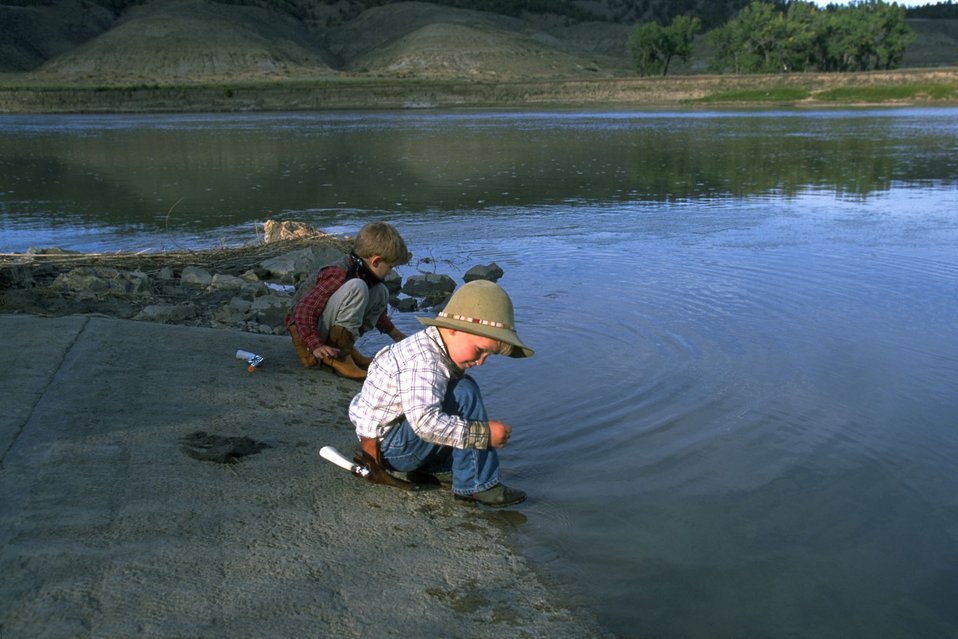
Enjoying the Upper Missouri River